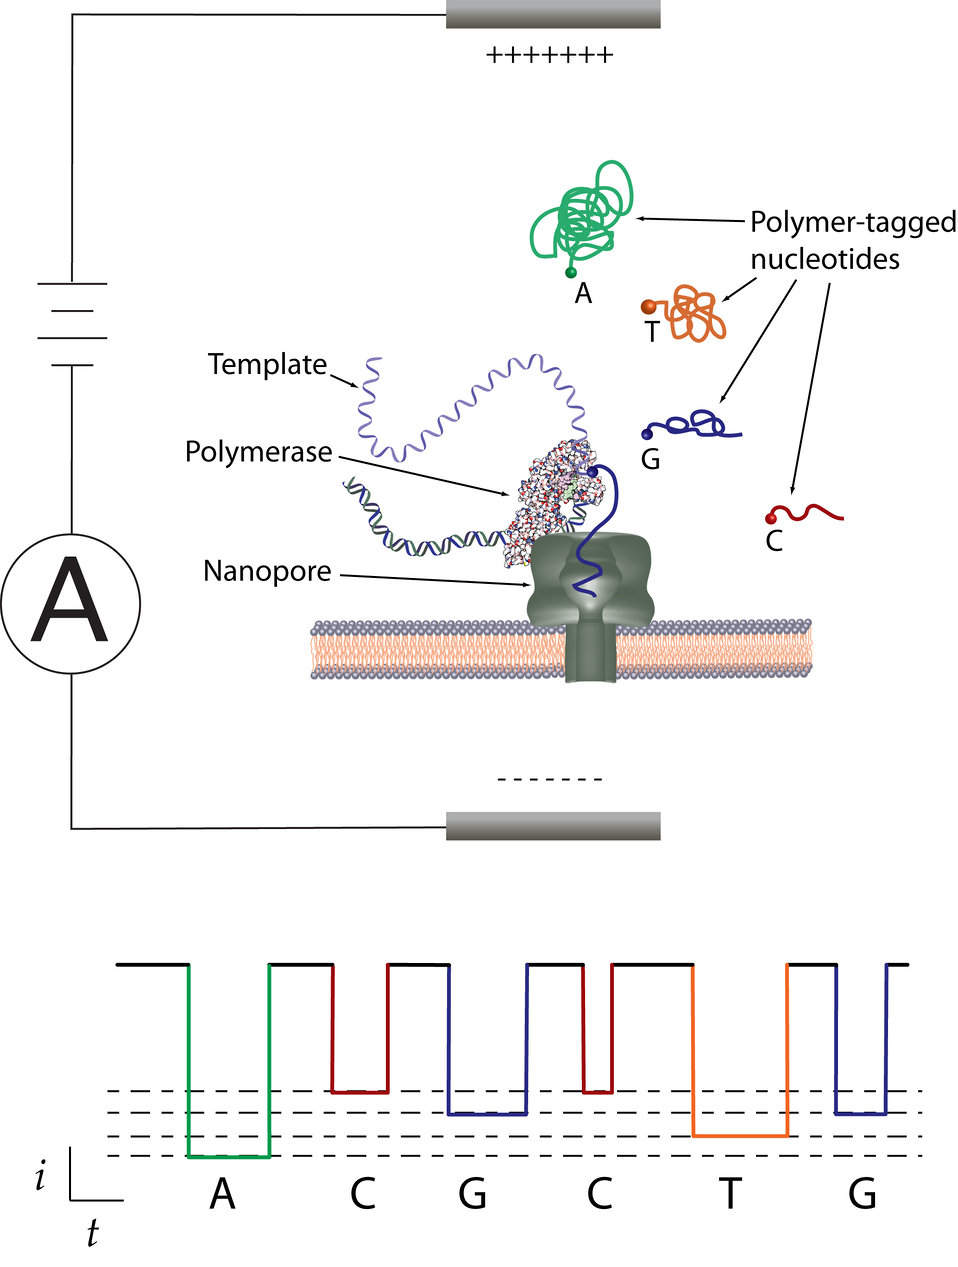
DNA Sequencing Method

Schematic of an artificial membrane, across which a voltage forces an ionized fluid through the nanopore. Nucleotides on a strand of DNA are first tagged with different-sized polymers, and then the strand is passed near the nanopore opening, where a polymerase cleaves the polymers and passes them one by one through the nanopore. As they pass, the pore produces a unique ionic current blockade signature due to the tag's distinct chemical structure, thereby determining DNA sequence.